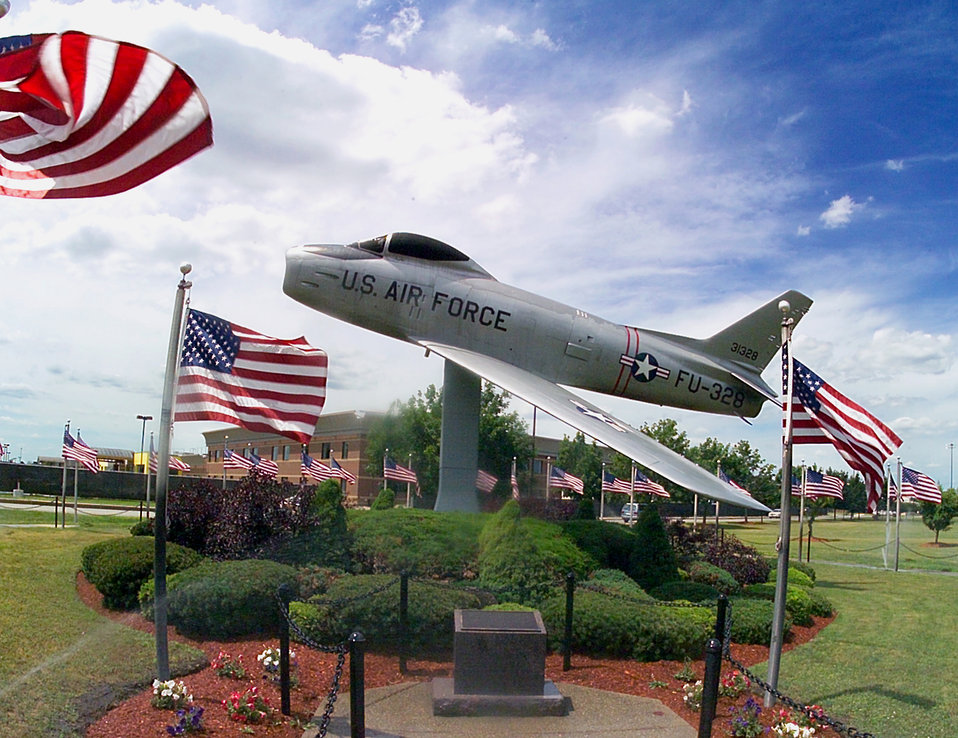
Fourth of July

SAN ANTONIO -- All members of the Air Force Total Force join the nation in celebrating a safe and happy Fourth of July.